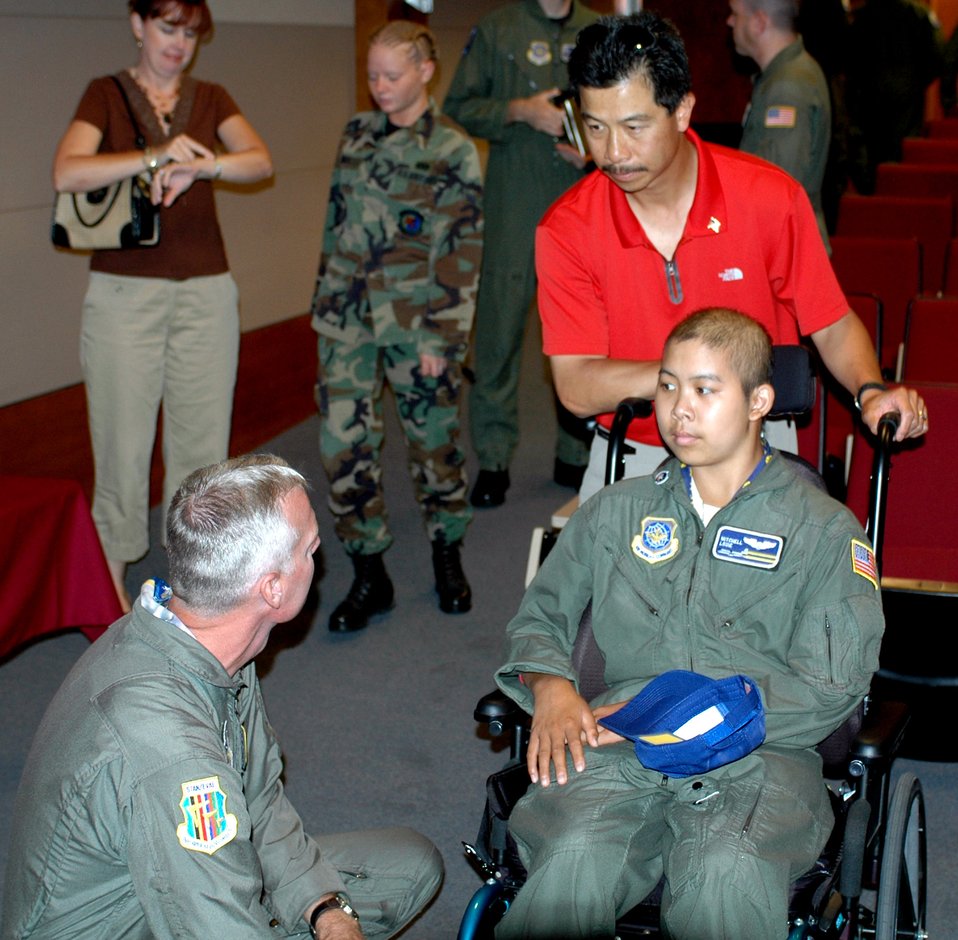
Travis Airmen grant child's wish

Mitchell Louie and his father, David, speak with Senior Master Sgt. Timothy Nelson, 60th Operations Group, after receiving his mission brief for the day. As part of the